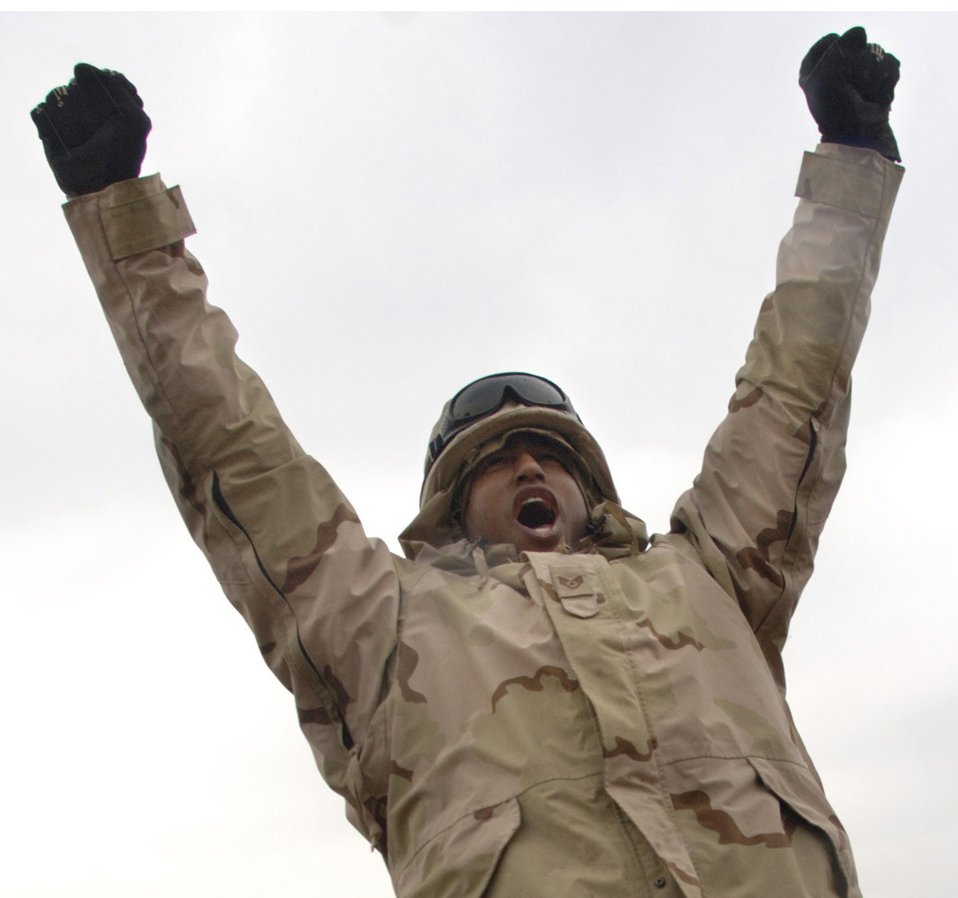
4 million miles

BALAD AIR BASE, Iraq (AFPN) -- Staff Sgt. Viktor Hancock celebrates the completion of a convoy security mission that achieved the unit's 4-million mile mark. As a gunner he operates the roof-mounted 128-pound, 50-caliber M2 machine gun. When called upon he can unleash 450 to 550 rounds per minute at up to 6,764 meters away. Sergeant Hancock is assigned to the 732nd Expeditionary Logistics Readiness Squadron and is deployed from Nellis Air Force Base, Nev.